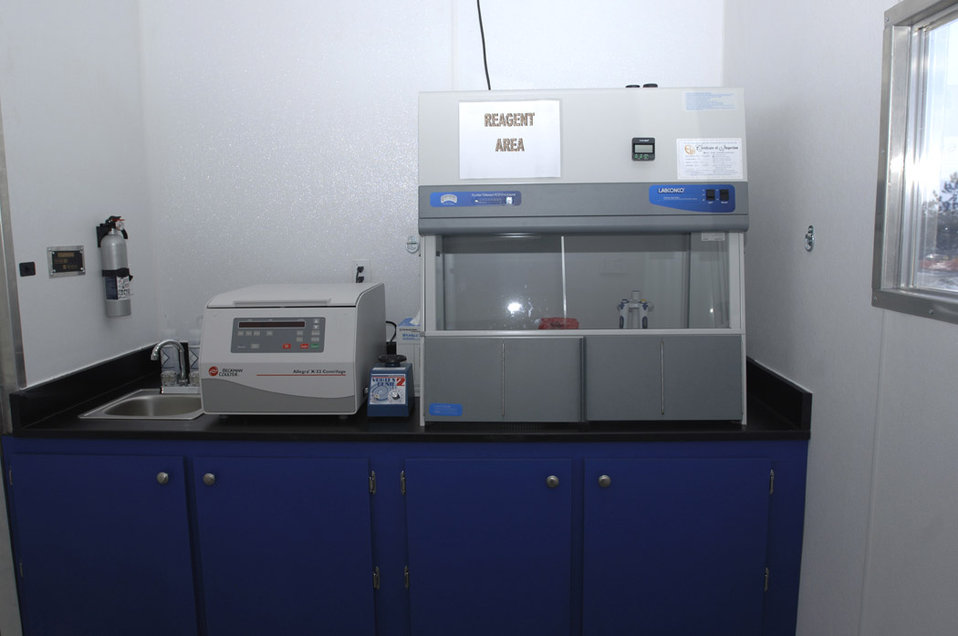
Trailer equipped for rapid response to biological agents

Officials at McConnell Air Force Base, Kan., accepted the Air Force's first laboratory response team trailer during a ceremony Feb. 6. The trailer is equipped with the Joint Biological Agent Identification and Diagnostic System, which can provide rapid analysis of biological agents, an essential capability during emergencies.